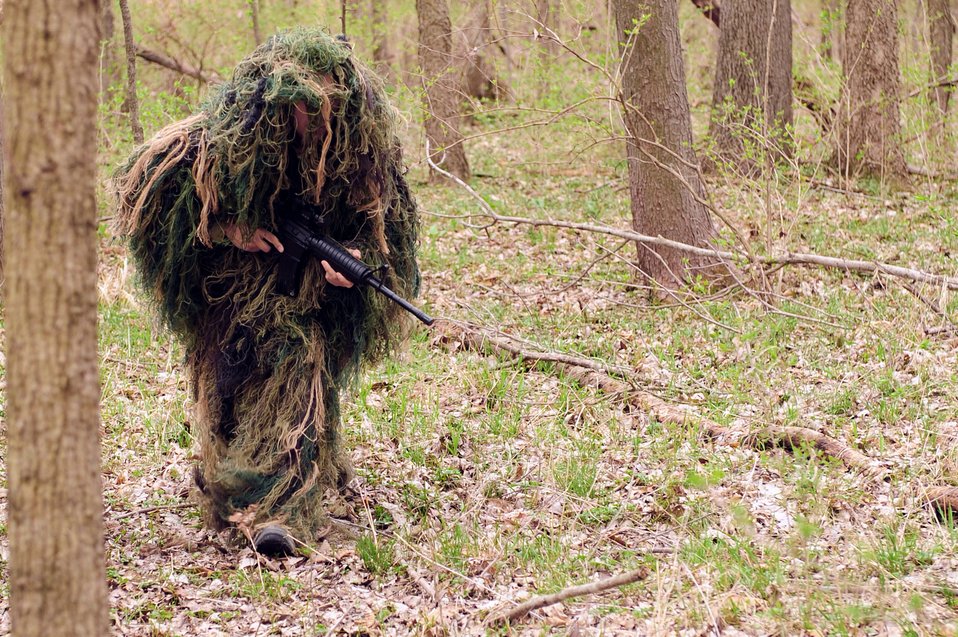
On the move

Tech. Sgt. Robert Graham participates in combat survival training March 22, 2011, at the Illinois Army National Guard's Sparta Training Area, in Sparta, Ill. Sergeant Graham is a survival, evasion, resistance and escape specialist with the 375th Operations Support Squadron at Scott Air Force Base, Ill.